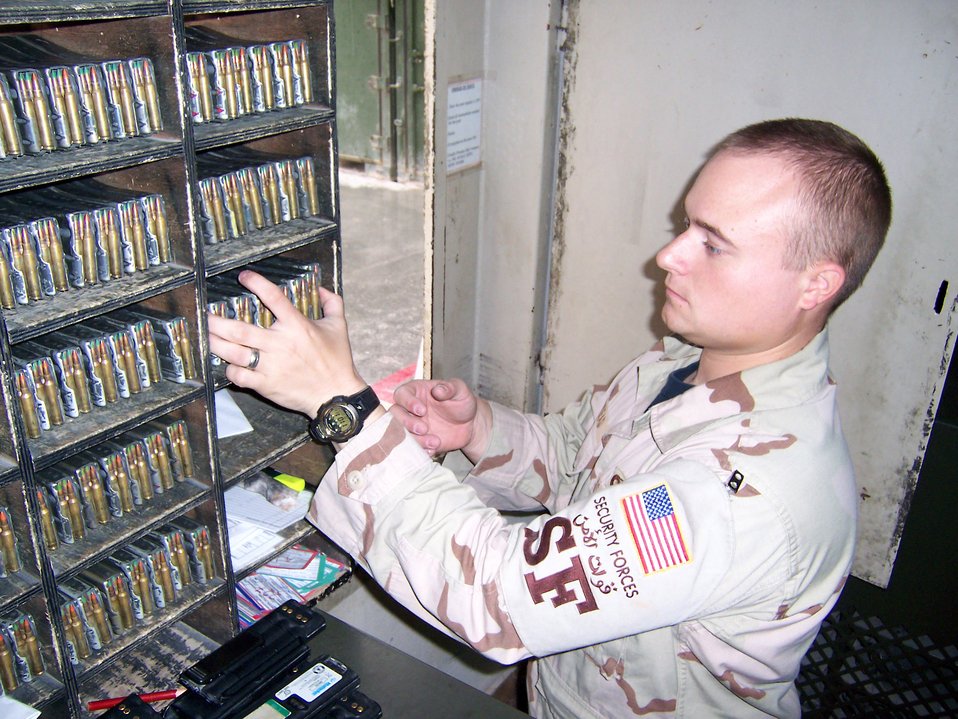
Section keeps security forces equipped, rolling

Senior Airman Creg Kinkead pulls out 210 rounds of 5.56 NATO ammunition, the amount used in a combat load for M4s. There are 24 ball round and six tracer rounds in each magazine. The tracers, which look like shooting stars when fired, are used to see where security forces are aiming at night. Airman Kinkead is a 379th Expeditionary Security Forces Squadron armory room attendant.